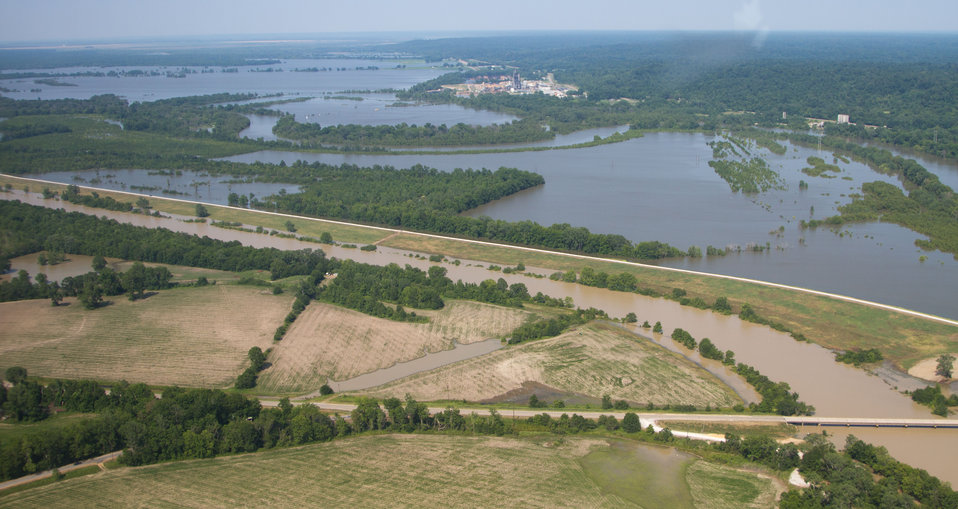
Aerial view of flooding of the Mississippi River, on Thursday, May 19, 2011 photographed from the MS side.